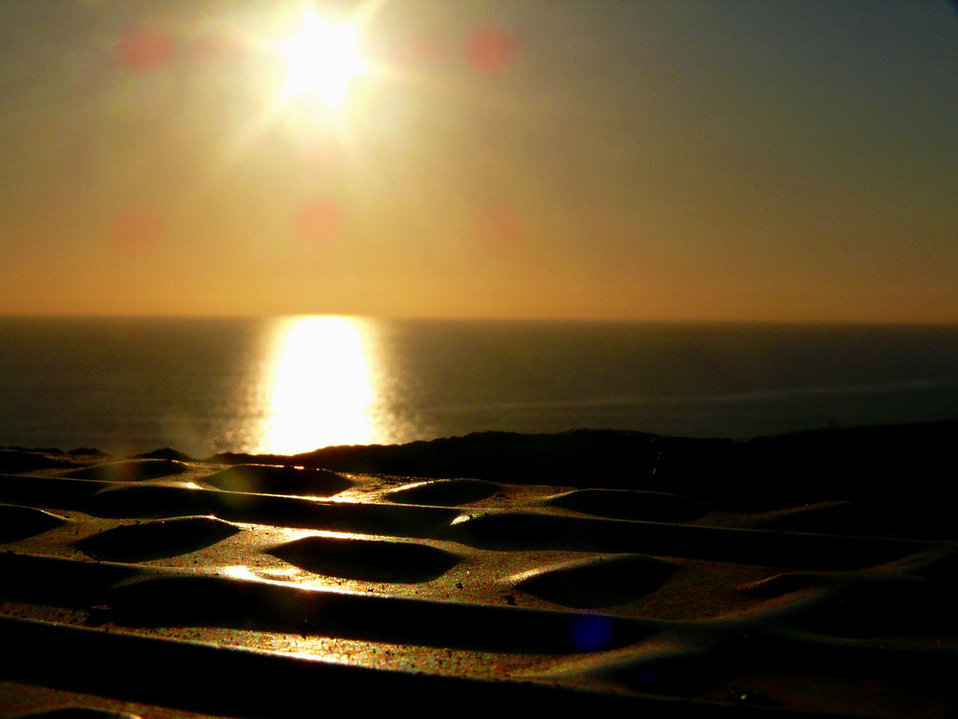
Sunset - bigbury

Sunset bigbury on the sea.